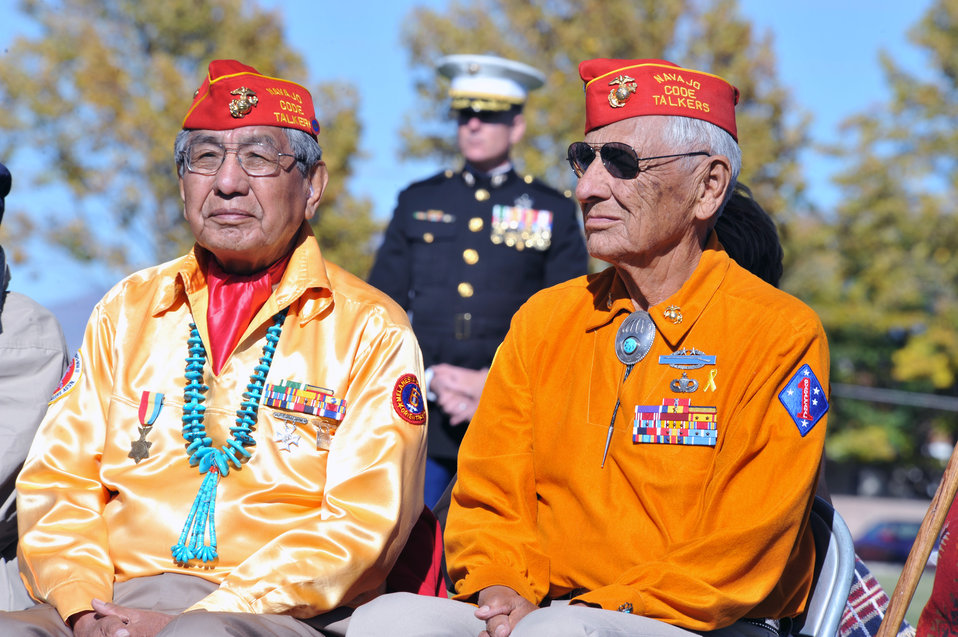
Code talkers

Navajo Code Talkers Peter Macdonald (left) and Roy Hawthorne participated in a ceremony Nov. 10, 2010, at Kirtland Air Force Base, N.M. to pay tribute to veterans and to celebrate Native American Heritage Month.